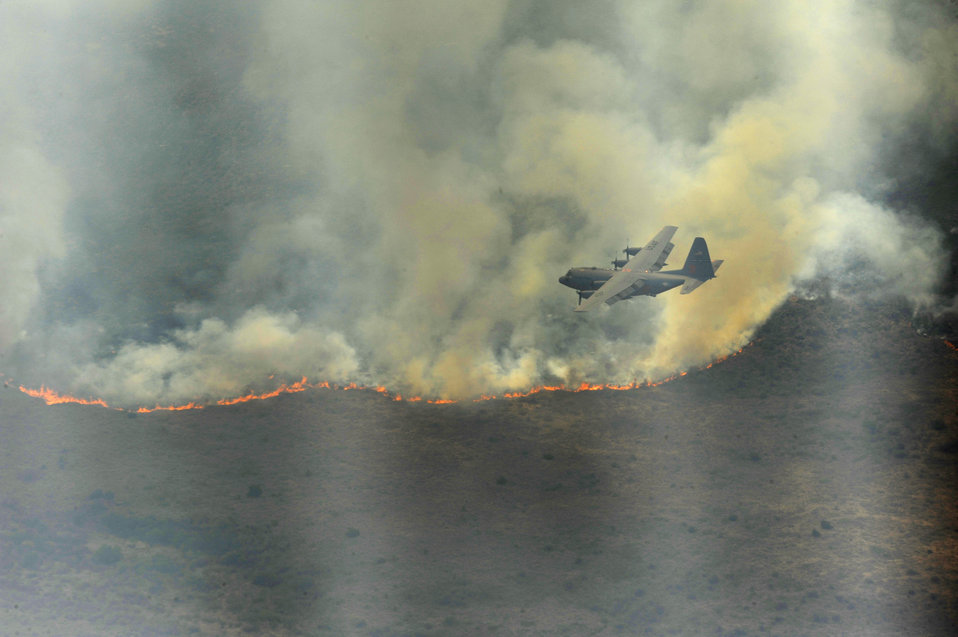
Texas Wildfires

A Modular Airborne Firefighting System-equipped C-130 Hercules prepares to drop fire retardant April 27, 2011, onto a West Texas wildfire. The wildfires have spread across parts of Texas and have burned more than 1,000 square miles of land.